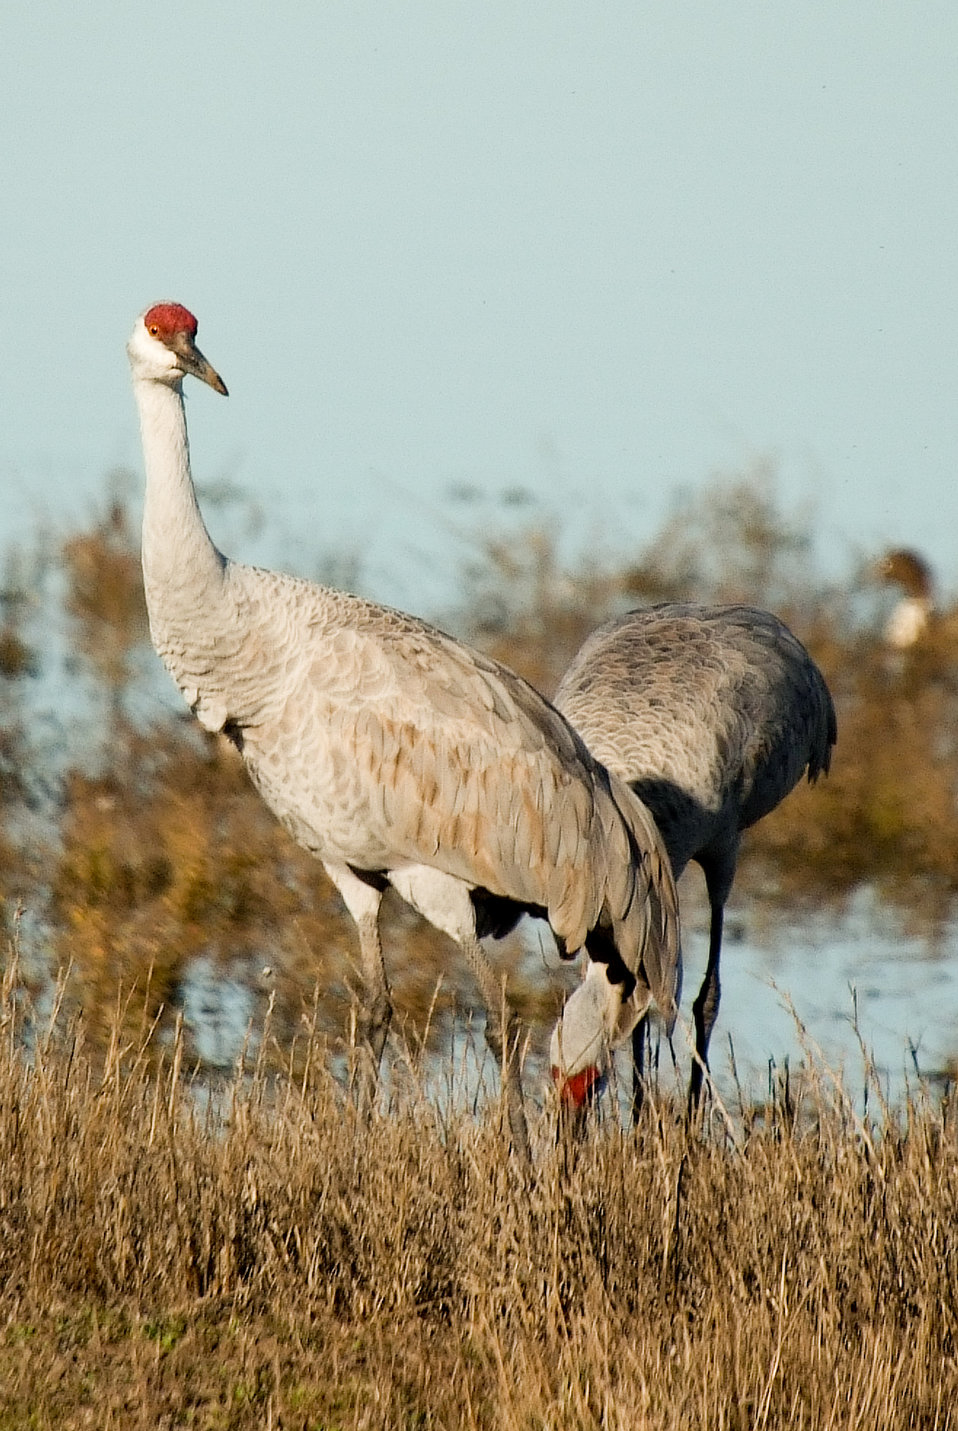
sandhill crane pair

Sacramento National Wildlife Refuge, CA
Photo: Justine Belson, USFWS
Nov. 2010